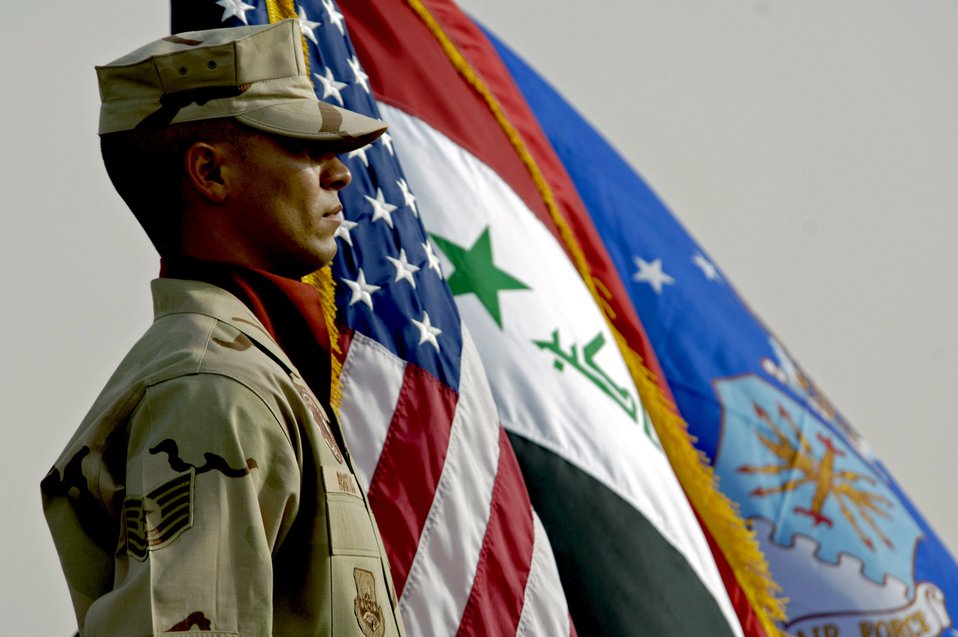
Military bearing

Tech. Sgt. Richard Rositas, a member of the 332nd Air Expeditionary Wing honor guard, holds the American Flag during a change-of-command ceremony July 4 at Balad Air Base, Iraq.